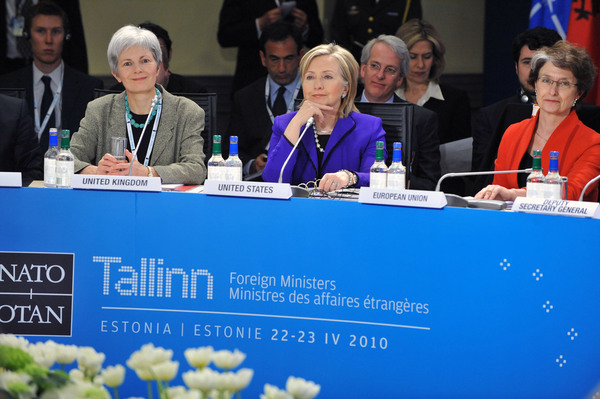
Secretary Clinton Participates in the NATO Foreign Ministers Meeting

U.S. Secretary of State Hillary Rodham Clinton, sits between Mariot Leslie, Permanent Representative of the United Kingdom to NATO, (left) and and Claude-France Arnould, Deputy Director, EU Crisis Management and Planning Directorate, (right) at the NATO Foreign Ministers Meeting in Tallinn, Estonia, April 22, 2010.